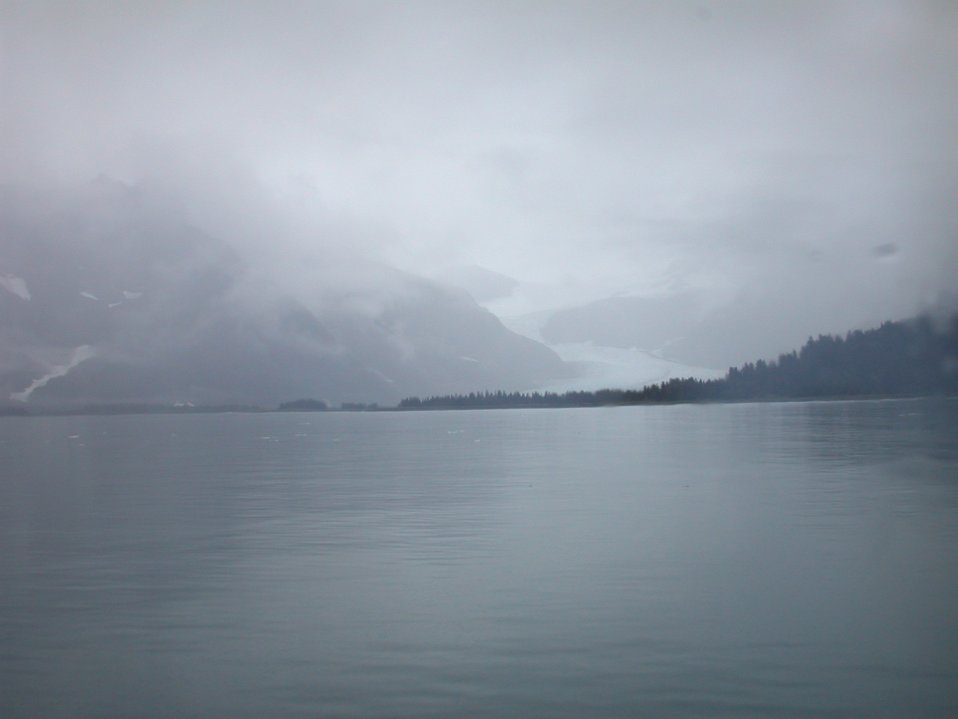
Glacier in Kenai Fjords area from offshore.